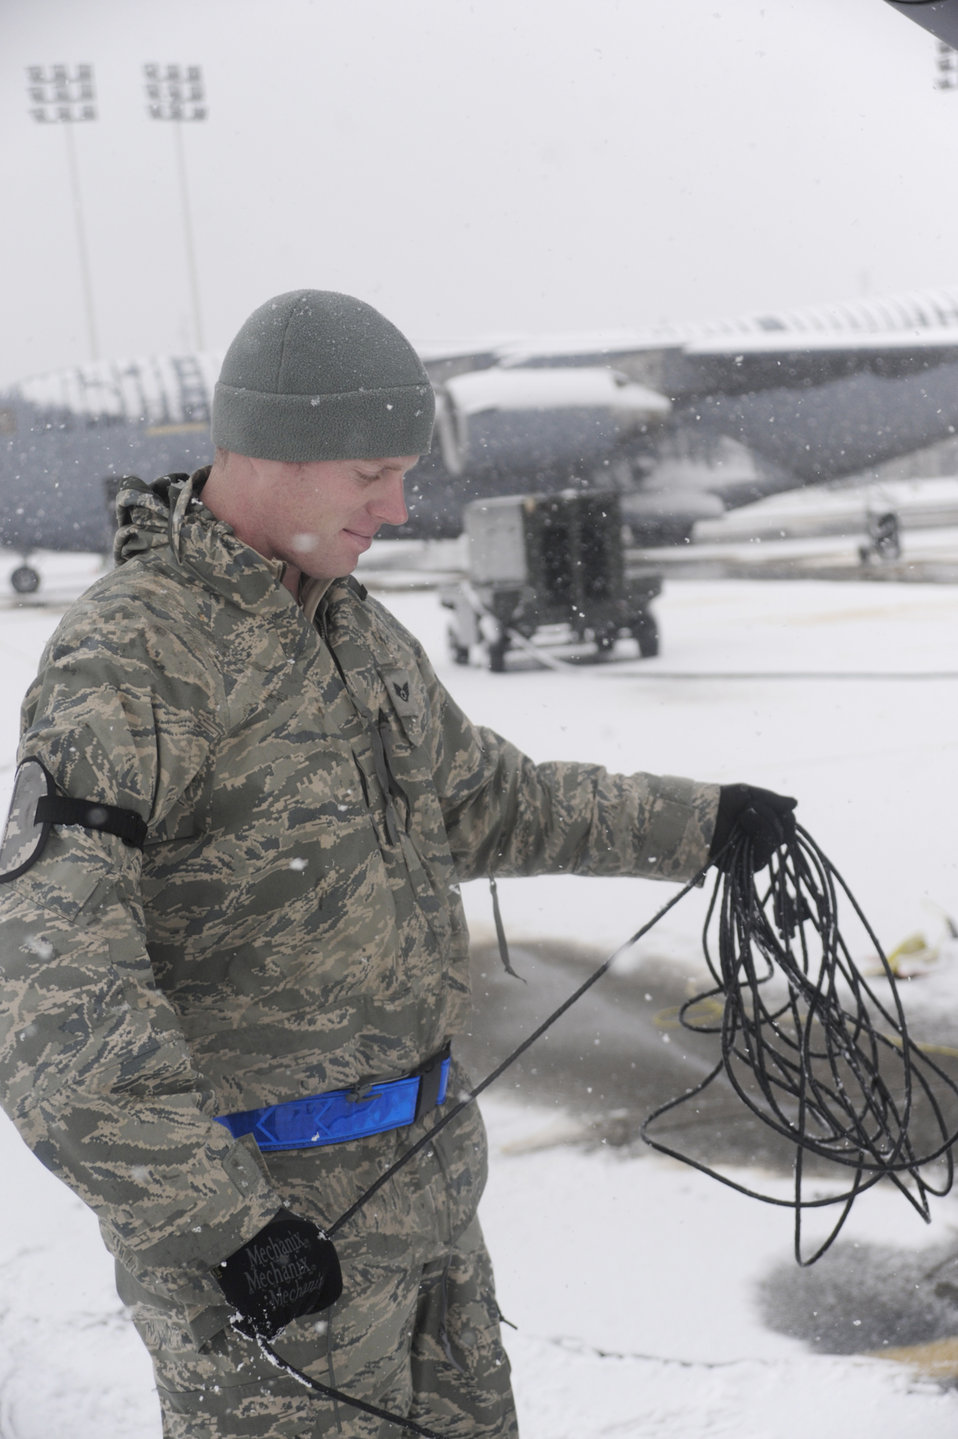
Snow sorties

Staff Sgt. Brandon Baimbridge wraps up communication cord after completing preflight checks during the first snowfall of the season Nov. 22, 2010, at Joint Base Lewis-McChord, Wash.. Sergeant Baimbridge is a crew chief with the 62nd Aircraft Maintenance Squadron.